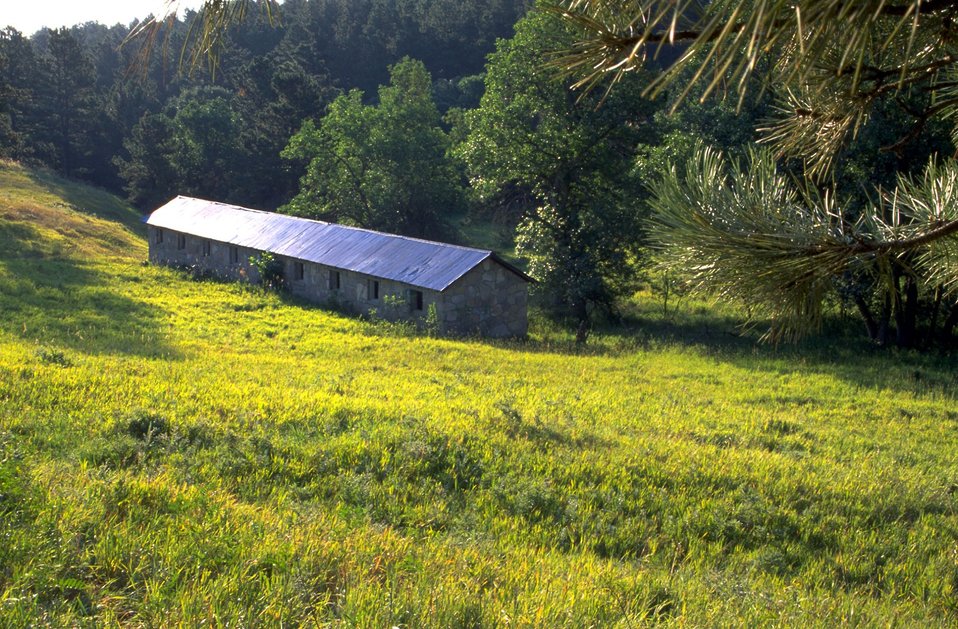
Long stone Building at south end of Fort Meade